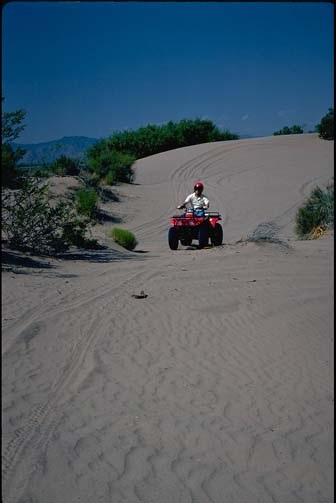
ATV enthusiast riding in the sand dunes.